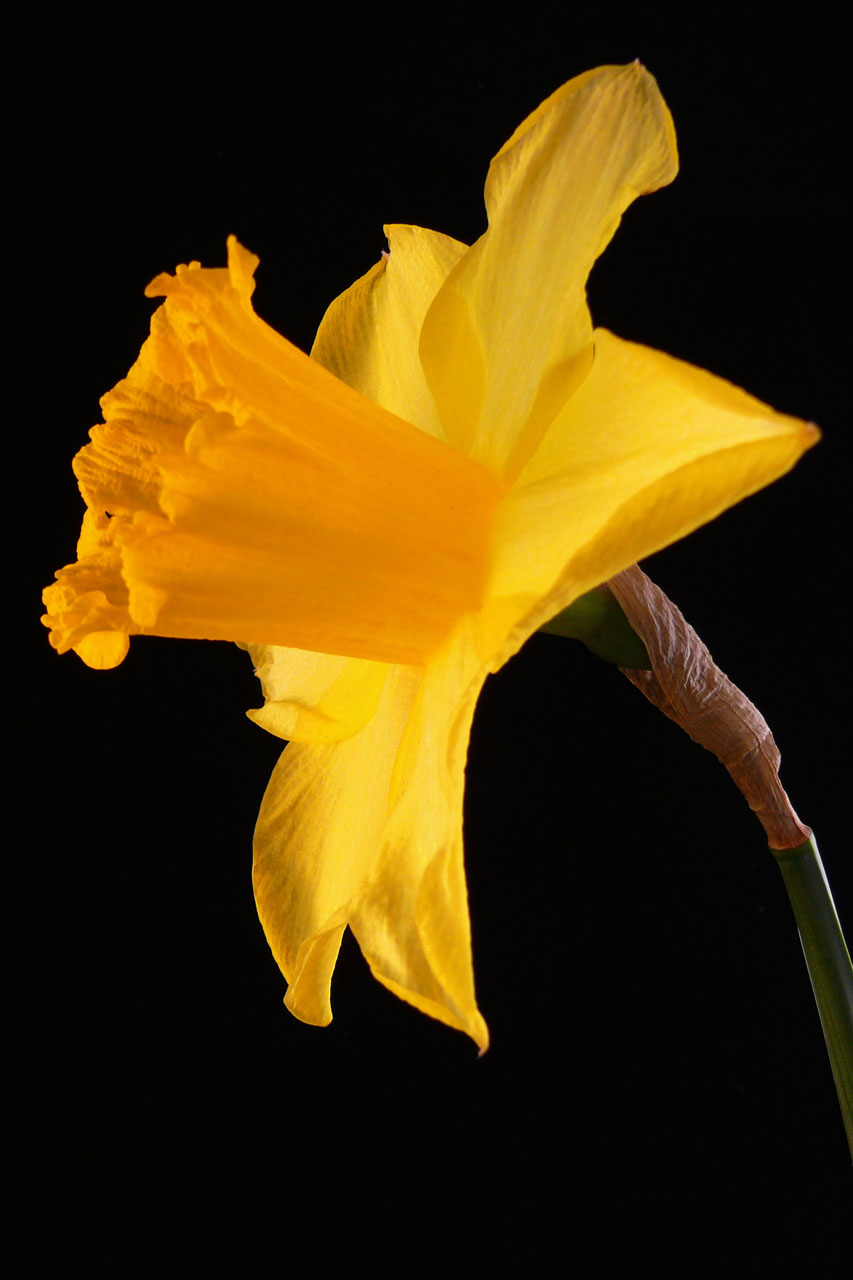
Daffodil flower

Daffodil on black backround.